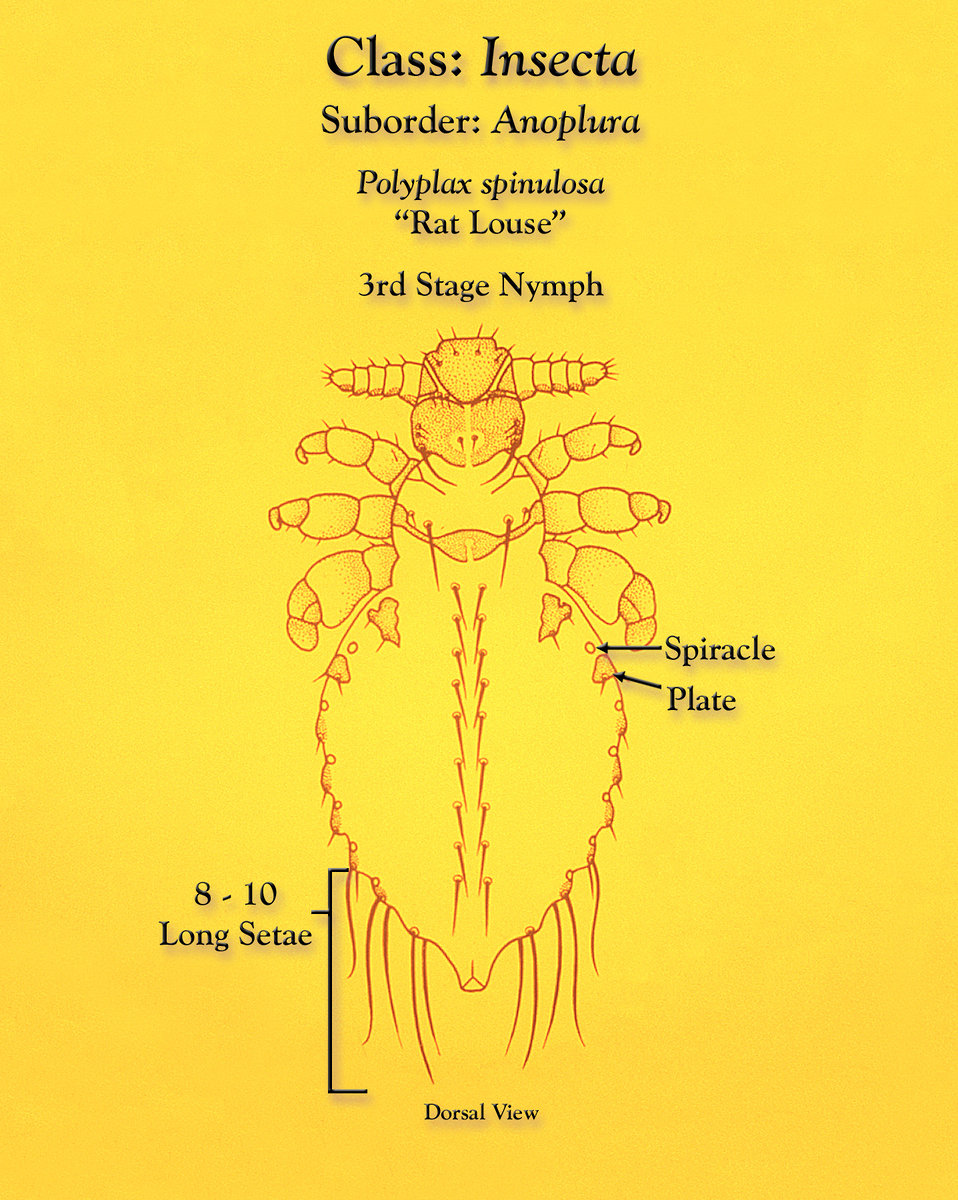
This illustration depicts the morphologic characteristics found to be displayed by Anopleural sucking lice members of the genus Polyplax during their third nymphal stage.